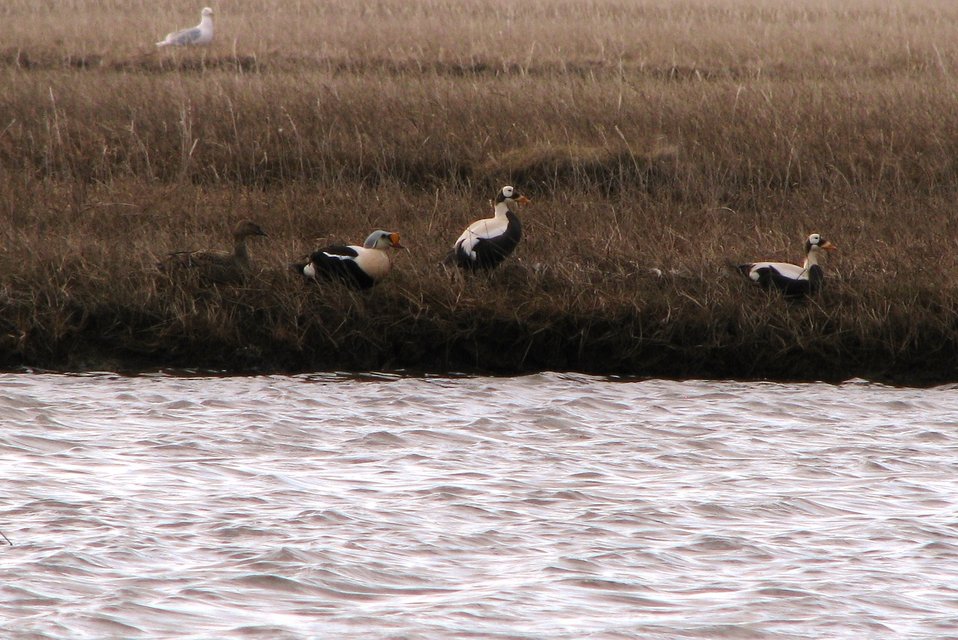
King Eider pair hanging out with a few Spectacled Eider males

Yukon Delta NWR